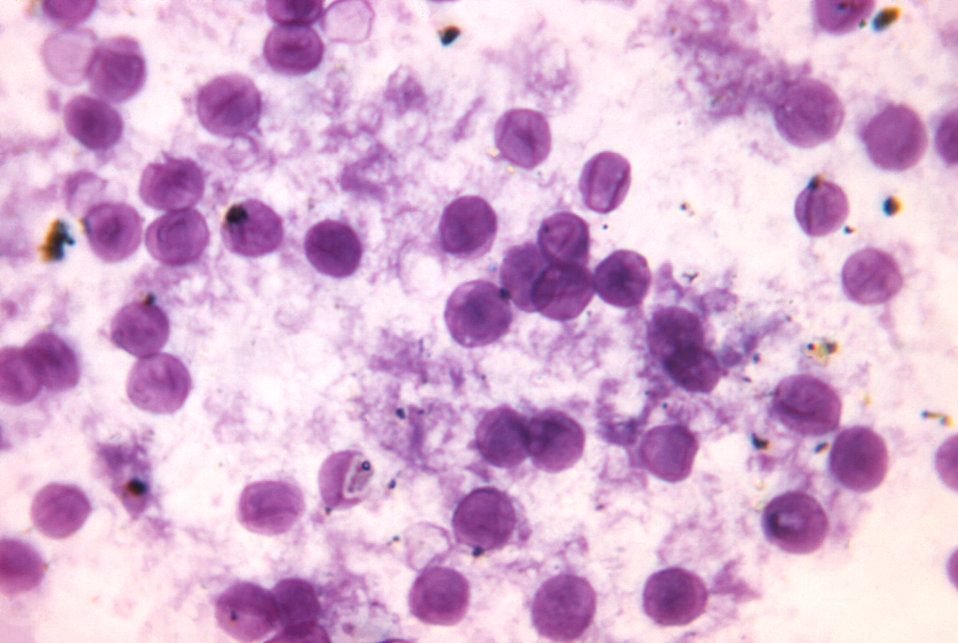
Smear of Pneumocystis jirovecii, formerly known as Pneumocystis carinii, concentrated from human lung. Toluidine blue stain.